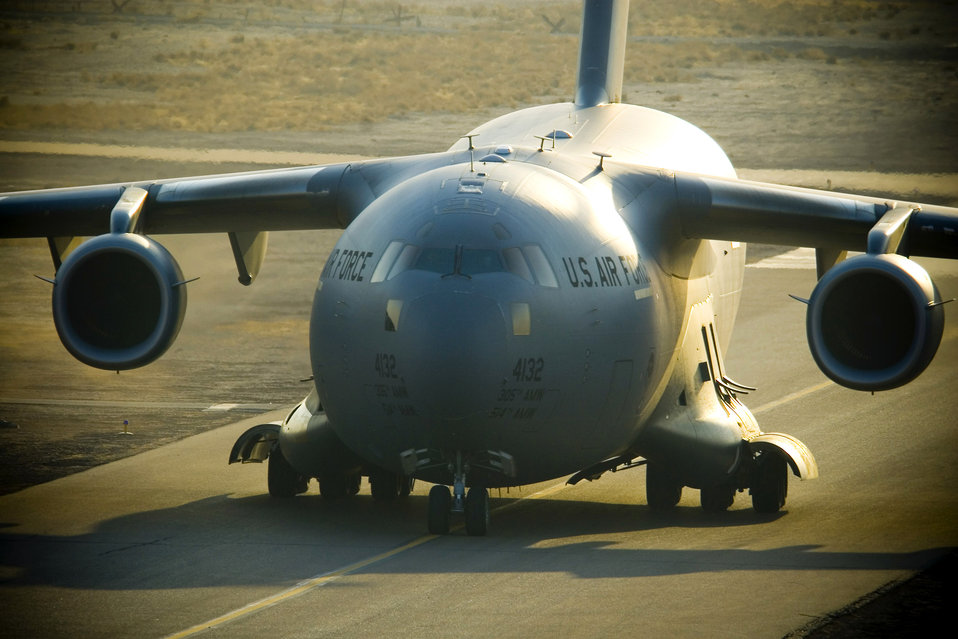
Jan. 13 airpower summary: C-17s on the move

A C-17 Globemaster III taxies to the ramp at Balad Air Base, Iraq. The aircraft can perform tactical airlift and airdrop missions and can also transport litters and ambulatory patients during aeromedical evacuations when required.